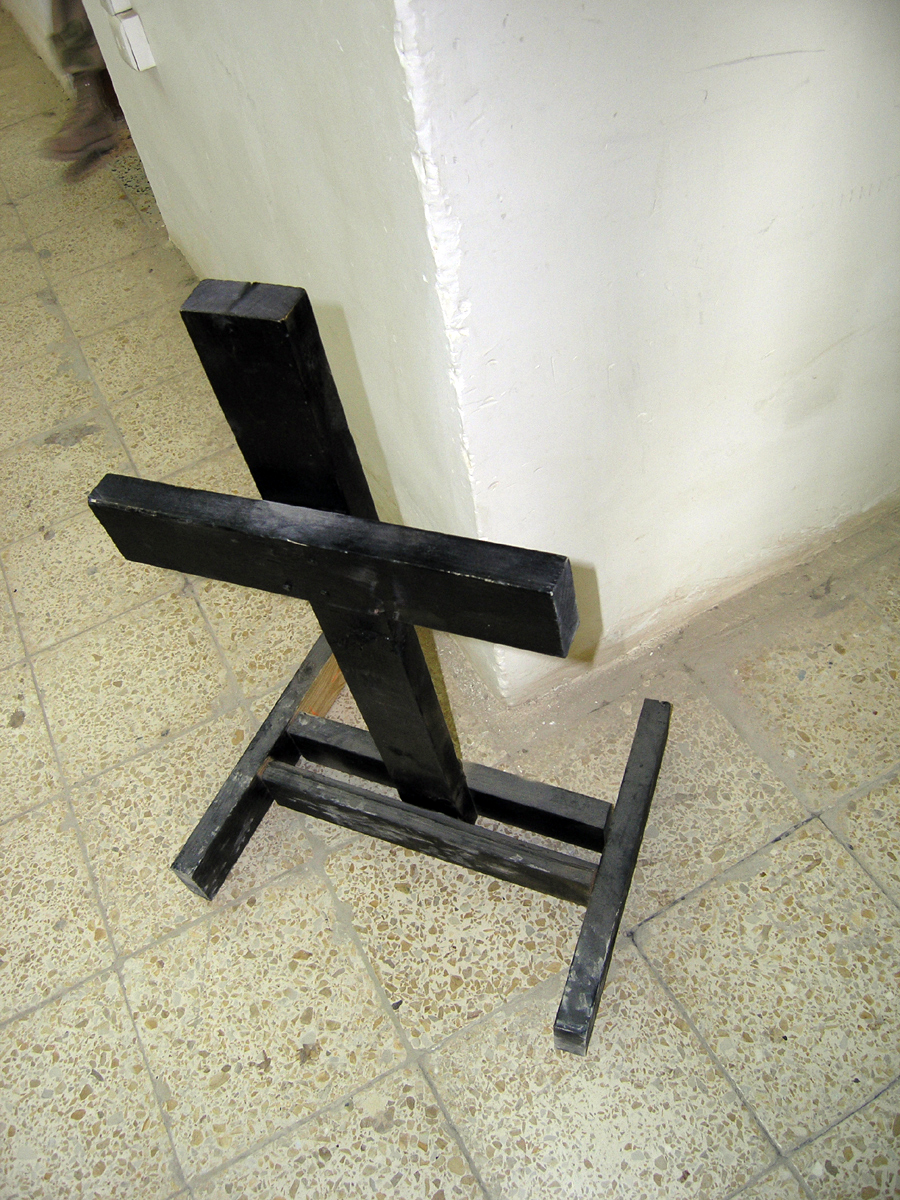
Protecting body armor

ALI BASE, Iraq -- Airmen with the 407th Expeditionary Security Forces Squadron took the initiative to build body armor racks to help Airmen safely store their body armor.